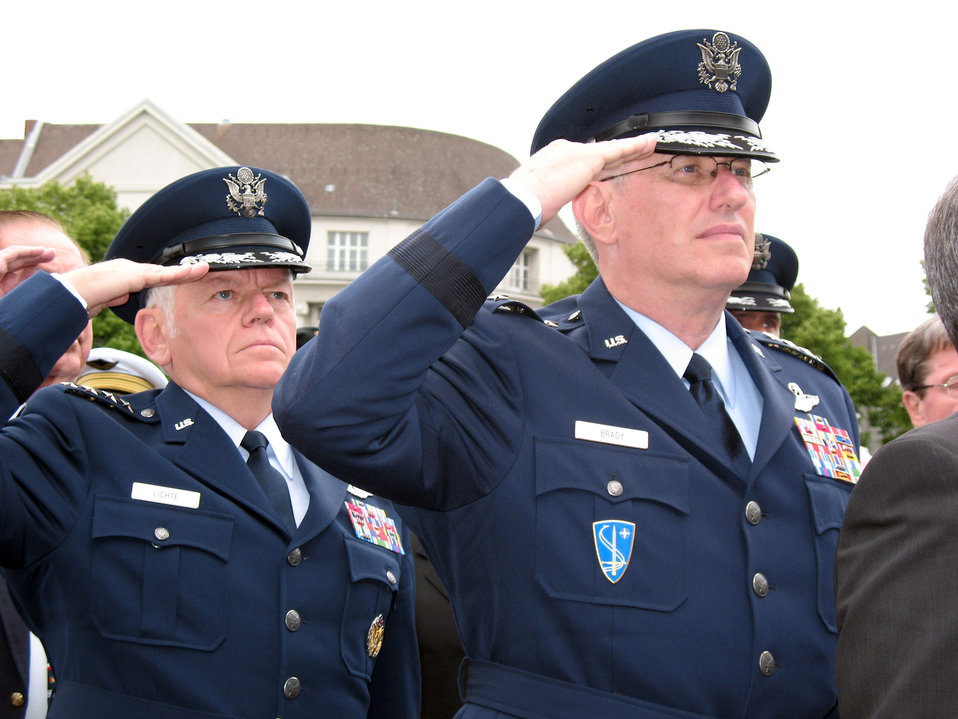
Remembering the Berlin Airlift

Gen. Arthur J. Lichte and Gen. Roger A. Brady salute during the playing of national anthems of the allied nations involved with the Berlin airlift June 27 in Berlin. The ceremony honored the 78 fallen airmen who lost their lives during the Berlin Airlift. General Lichte is the commander of Air Mobililty Command, and General Brady is the U.S. Air Forces in Europe commander.